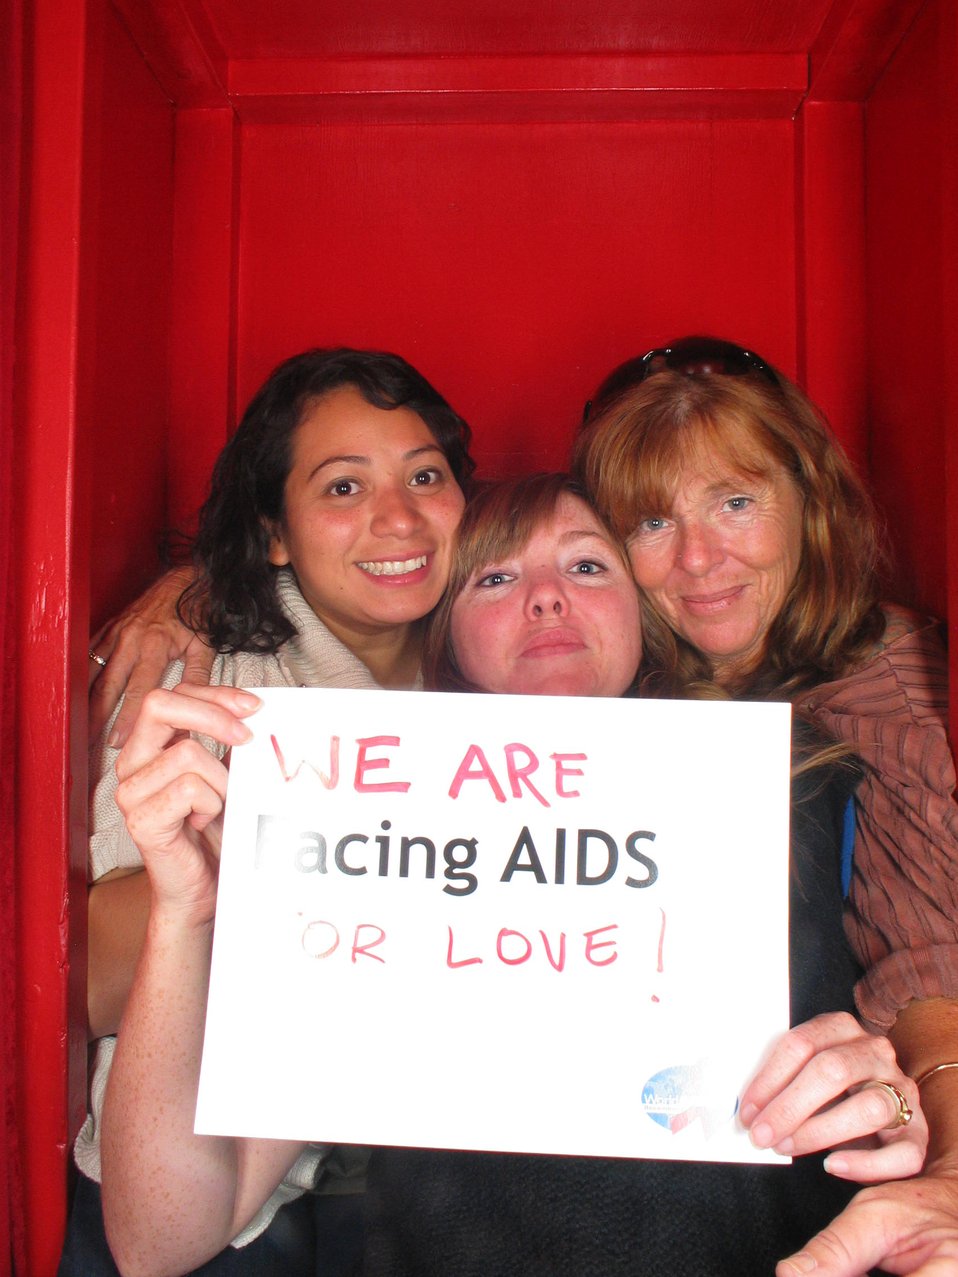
We are Facing AIDS for love!